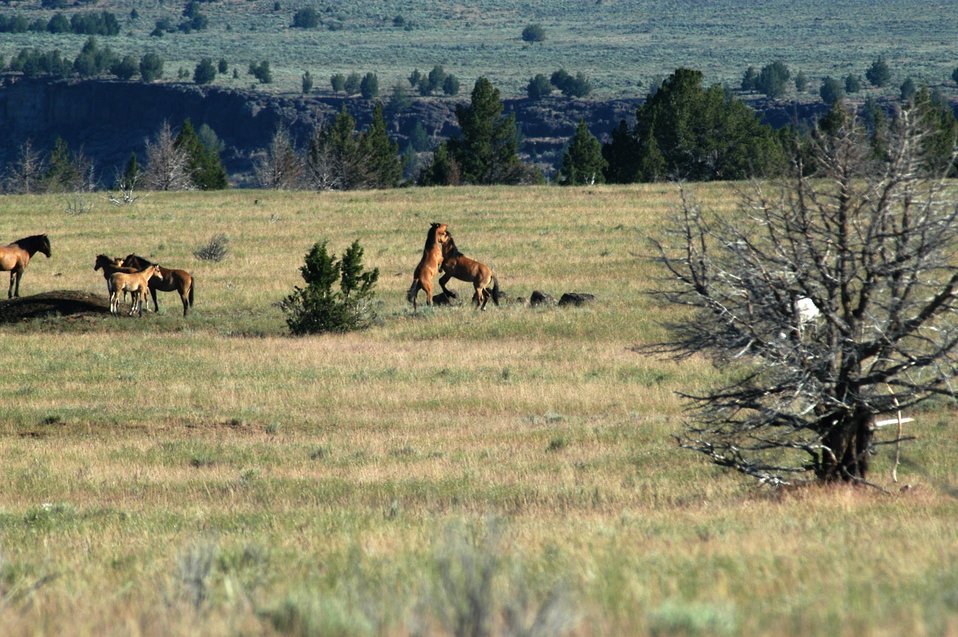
Kiger horses roam the plateaus of the Kiger Wildhorse Herd Management Area near Steens Mountain in Southeastern Oregon.